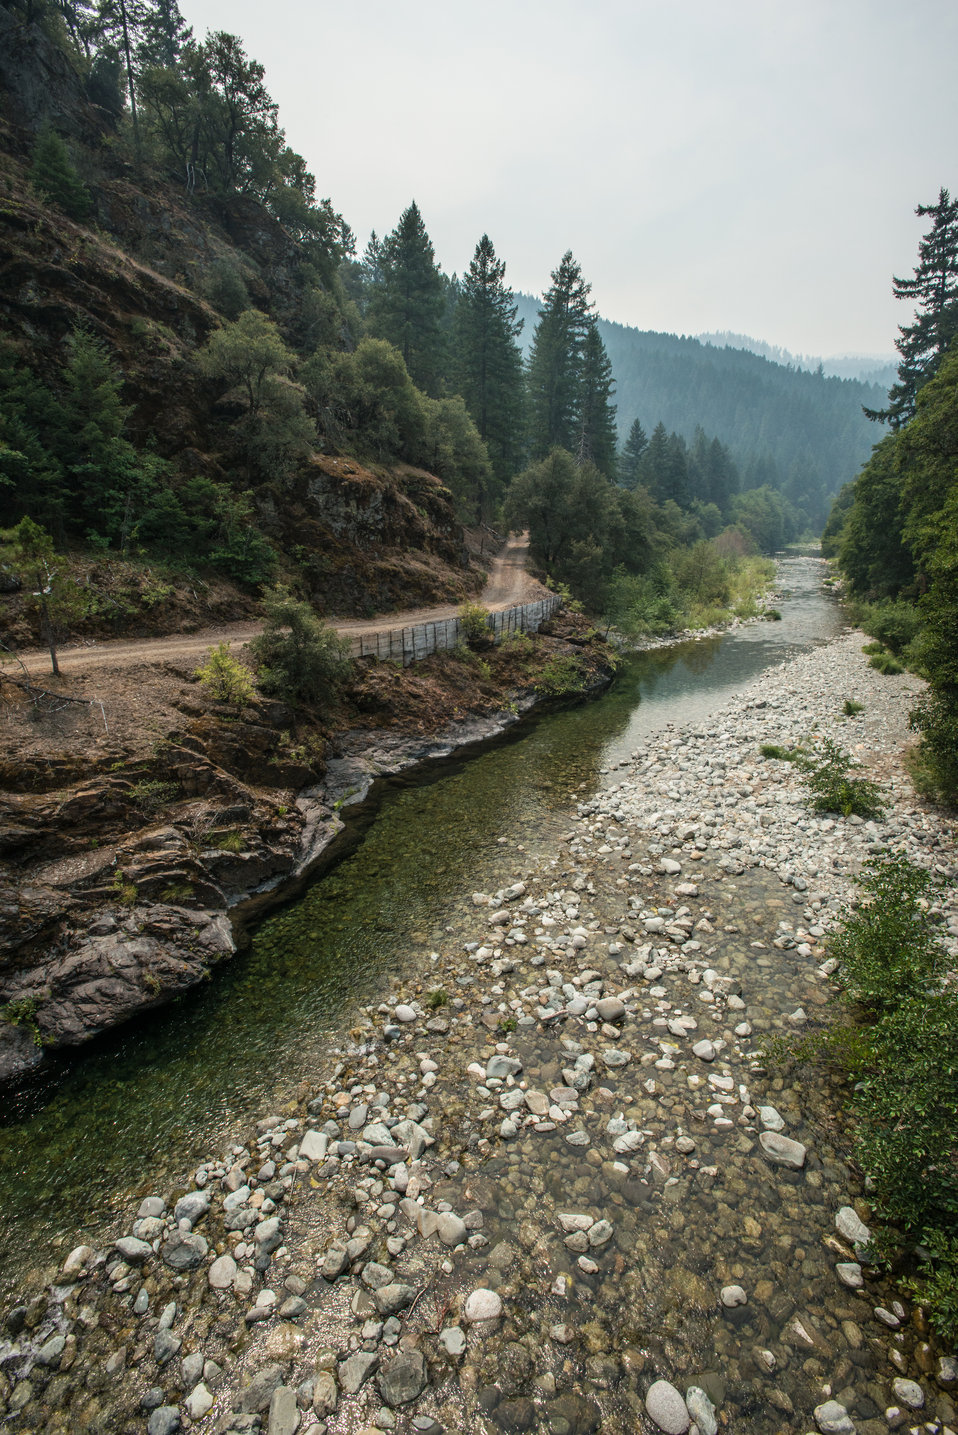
The clear waters of the North Fork Salmon River runs along the south side of Sawyers Bar (right), in Klamath National Forest, Calif., where the Salmon River Complex Wildlands Fire burns miles away to the northwest and west of Etna and Yreka, CA, on Tuesday, Aug. 6, 2013.